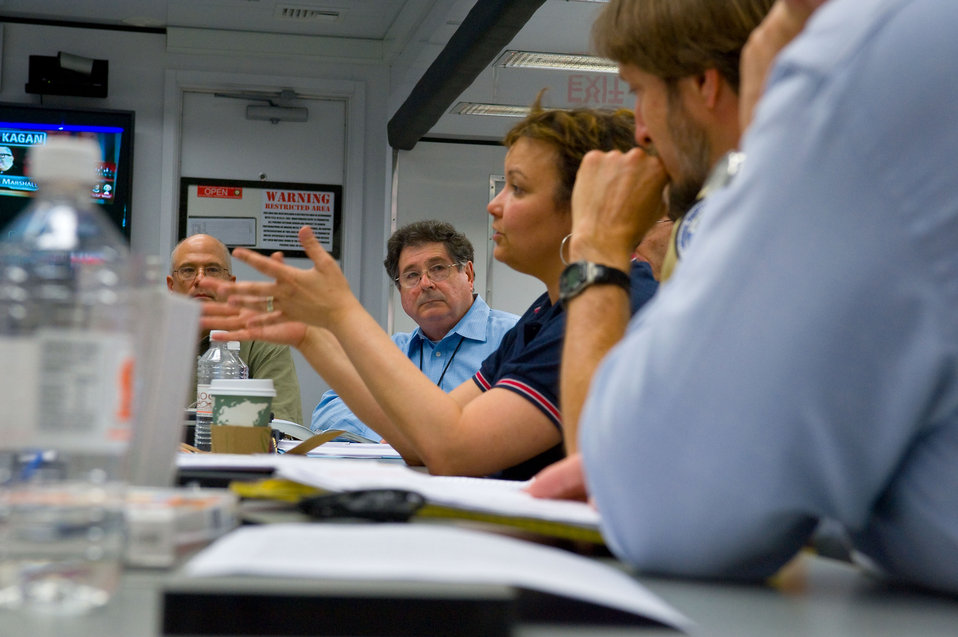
EPA Administrator Meets with Gulf Region Scientists

May 10, 2010 - EPA Administrator Lisa P. Jackson holds a science briefing with of local community organizations.